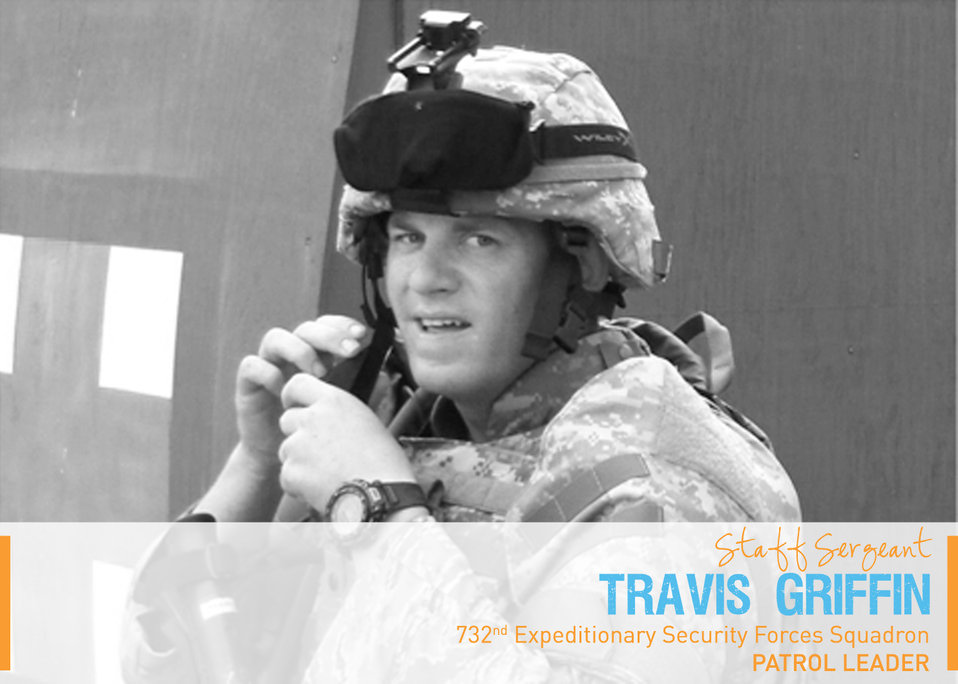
Portraits in Courage Vol 4: Staff Sgt. Travis Griffin, deceased. He was a patrol leader, 732nd Expeditionary Security Forces Squadron. He headed a police transition team that negotiated the worst streets of Baghdad and his mission was to restore law and order while training, mentoring, and coaching Iraqi police. He was killed when an explosively formed penetrator hit his vehicle.